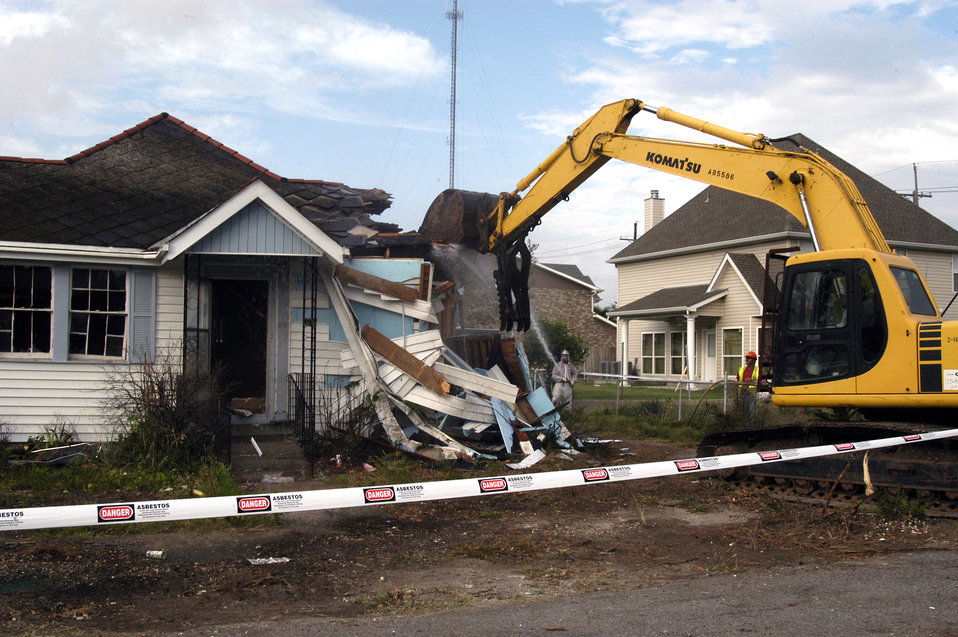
Many of the older homes and buildings in the New Orleans, LA, locale that were destroyed by Hurricane Katrina contained asbestos material (i.e. asbestos roofing tiles, transite siding, insulation, floor tiles, and popcorn ceilings). The U.S. Army Corps of Engineers (USACE) was mandated to follow strict environmental protocols in the demolition of these homes that were designated Regulated Asbestos Containing Material (RACM) demolitions. Prior to and during the demolition of the RACM house, water was constantly sprayed onto the building to prevent the asbestos containing material from becoming “friable” (airborne).